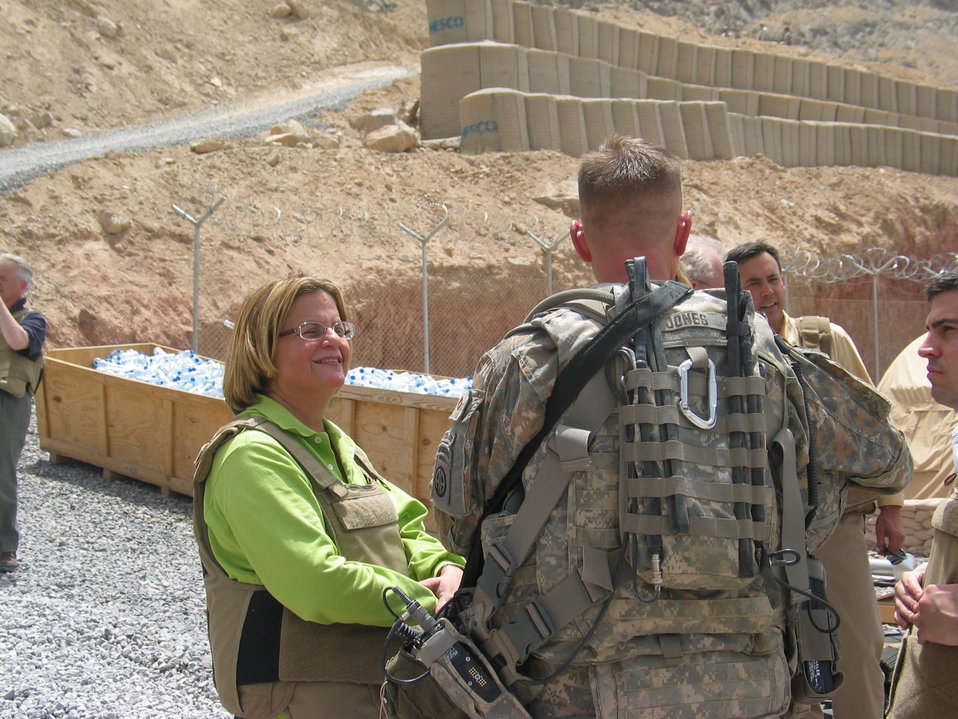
CODEL Berman